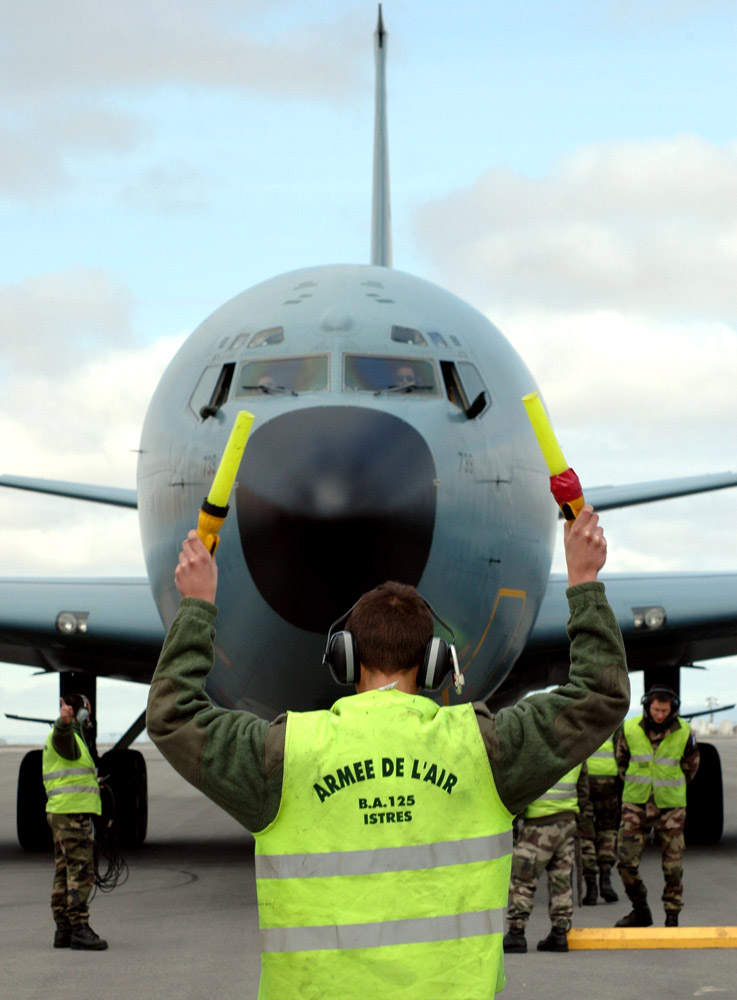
French help fuel Operation Enduring Freedom

French coalition 'Les Pistards,' or ground crew, marshall in a C-135FR refueler at Manas Air Base, Kyrgyzstan. The Flight Refueling Group 93